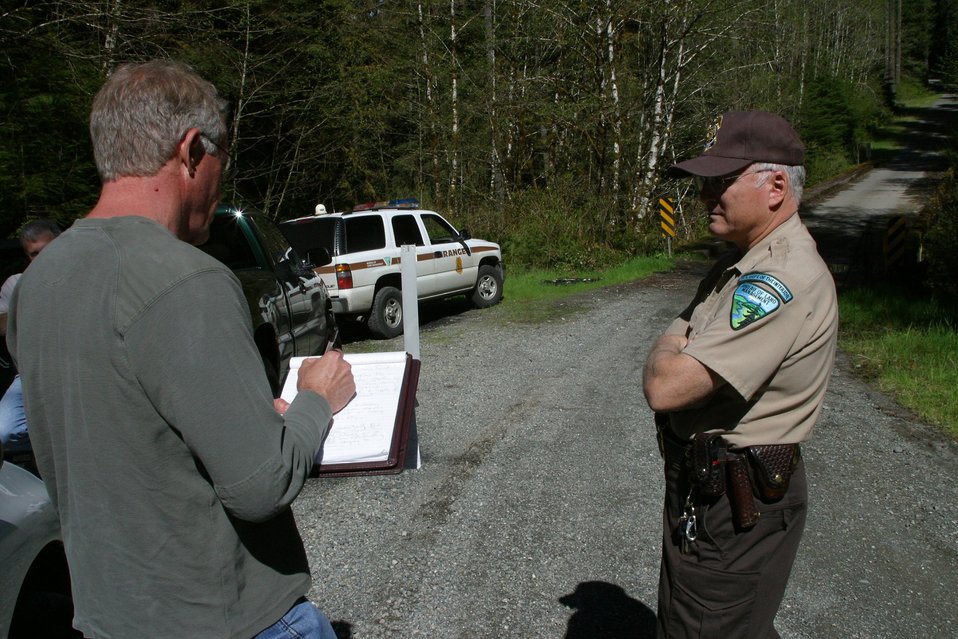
OPB producer Jim Newman interviews Dennis Daraghy, BLM Salem District Ranger about the Lyon's bridge gaurdrail theft.